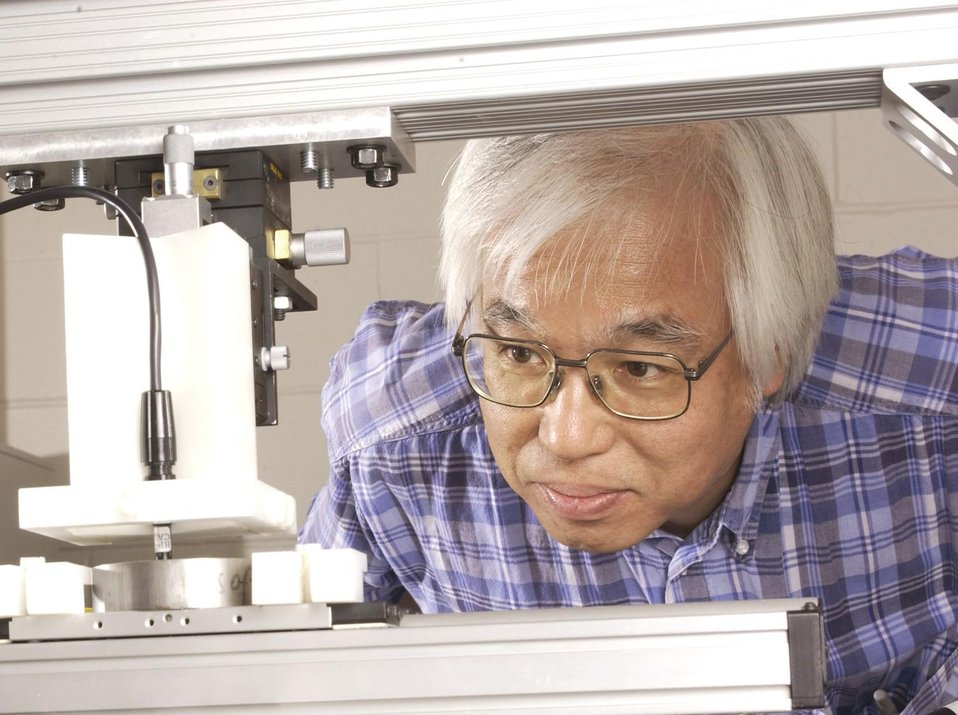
AMES PHYSICIST NORIO NAKAGAWA STUDIES EDDY CURRENT INSPECTION AS ONE OF THE NONDESTRUCTIVE EVALUATION TECHNOLOGIES TO MONITOR NUCLEAR POWER REACTORS.

NUCLEAR POWER PLANTS PROVIDE APPROXIMATELY ONE-FIFTH OF THE NATION'S ELECTRICITY. HELPING TO KEEP THEM RUNNING SAFELY ARE NONDESTRUCTIVE EVALUATION TECHNOLOGIES DEVELOPED AT AMES LABORATORY. BY PROVIDING THE ABILITY TO LOOK INSIDE CRITICAL PIPES STRUCTURES WITHOUT DESTROYING THEM NDE HAS BECOME ESSENTIAL TO THE NUCLEAR POWER INDUSTRY.